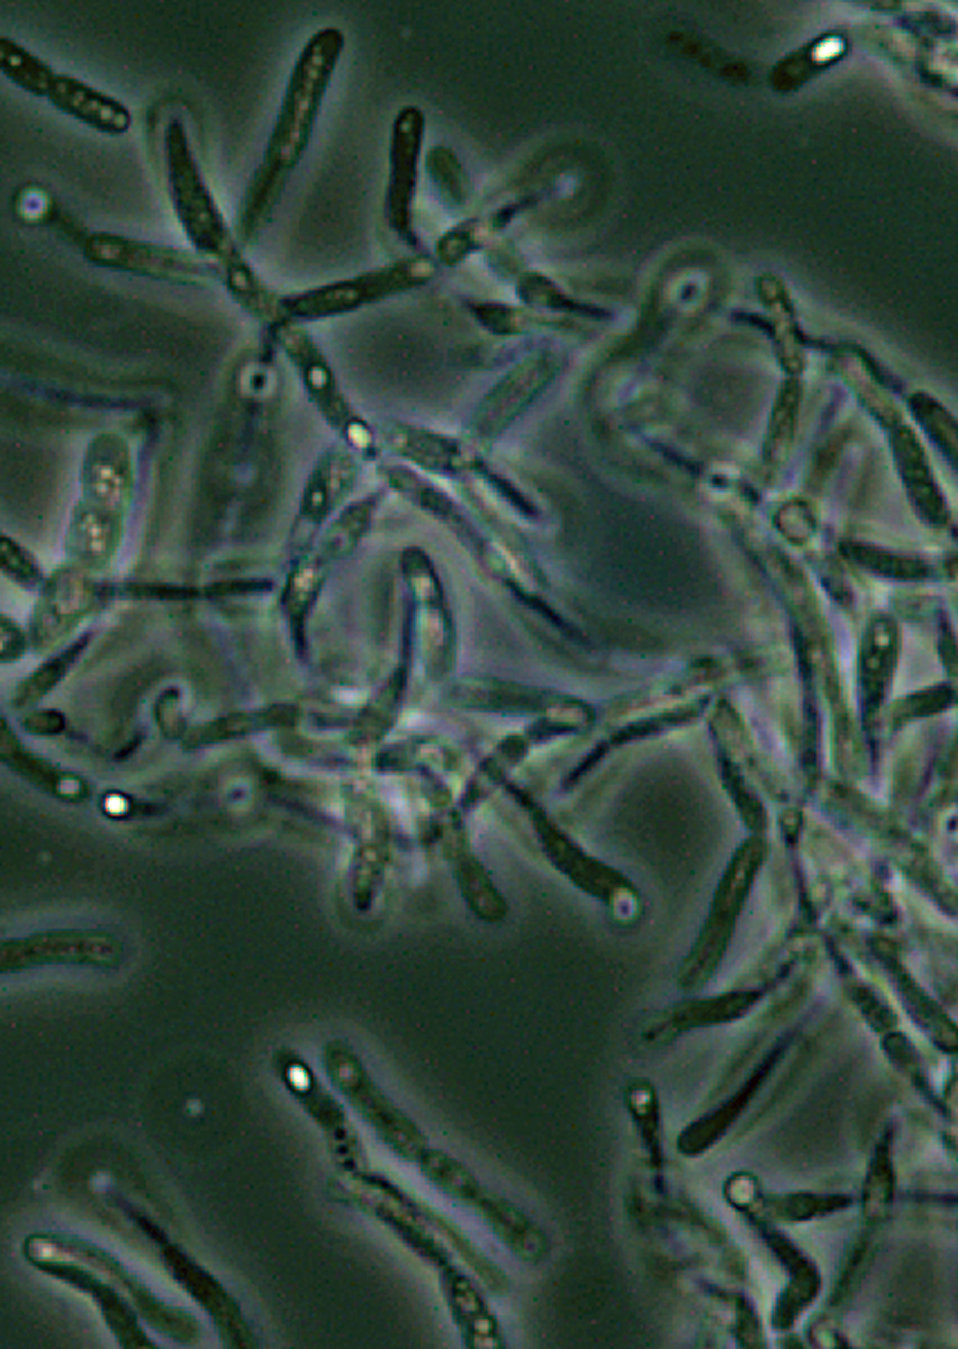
Bacillus anthracis spores seen under phase contrast microscopy.